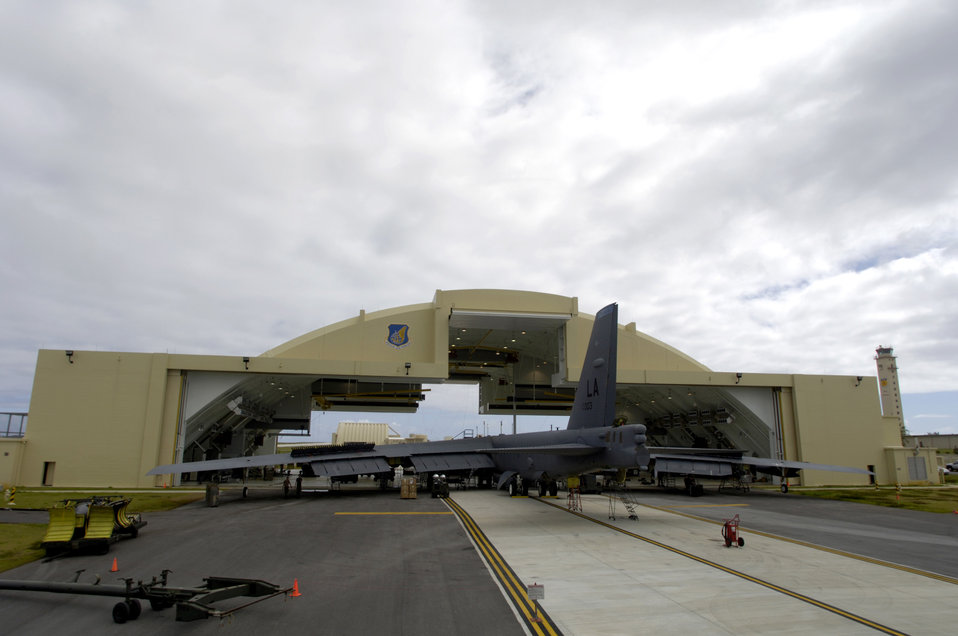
Growing mission

ANDERSEN AIR FORCE BASE, Guam (AFPN) -- A B-52 Stratofortress from Barksdale Air Force Base, La., sits in Hangar 1 during phase maintenance. The B-52s come here from a forward-deployed location and go into phase maintenance after 300 flying hours. The $34-million hangar is the newest in the Air Force and can house any type of Air Force aircraft.